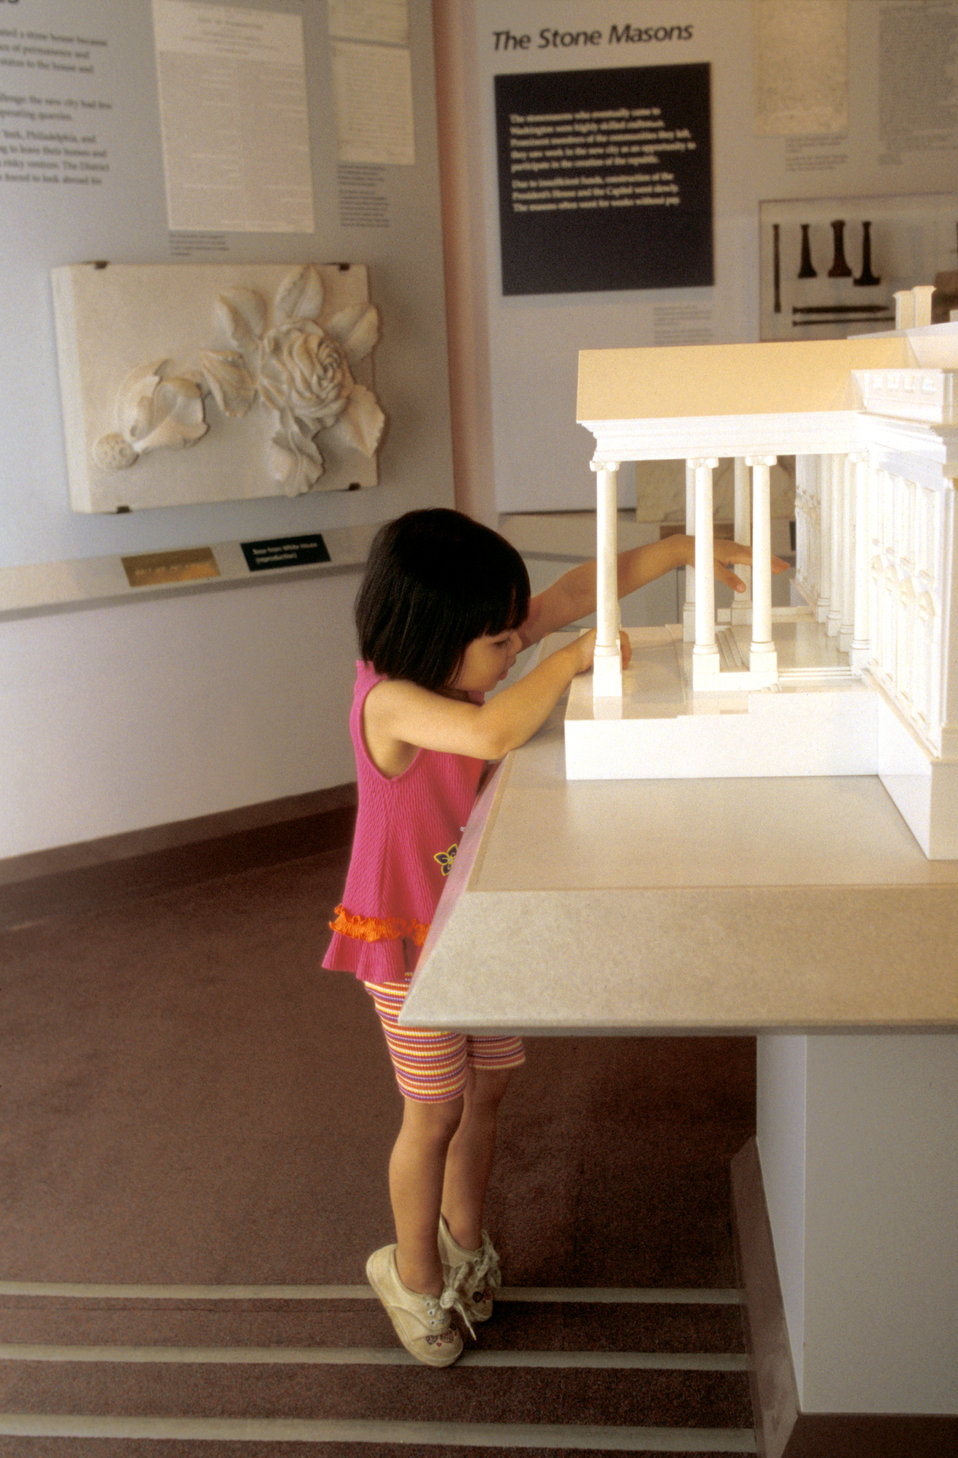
This was the seventh in a series of eight images (PHIL# 9088 - 9095) revealing the exhibits inside the U.S. National Building Museum, all of which could be touched by all visitors, including adults, children, and especially those who were mobility, or visually impaired. Consideration paid to those with such impairments during the designing of this facility, enhanced the enjoyment experienced by all participants, as well as their overall learning experience. Mounted so standing, or seated users could fully appreciate their visit, the exhibits included Braille descriptions, large print signs. This unimpaired young child, was at an age where touching the exhibits enhanced her learning experience, and therefore, was encouraged. 'The Center for Universal Design (CUD) is a national research, information, and technical assistance center that evaluates, develops, and promotes accessible and universal design in housing, buildings, outdoor and urban settings and related products.'